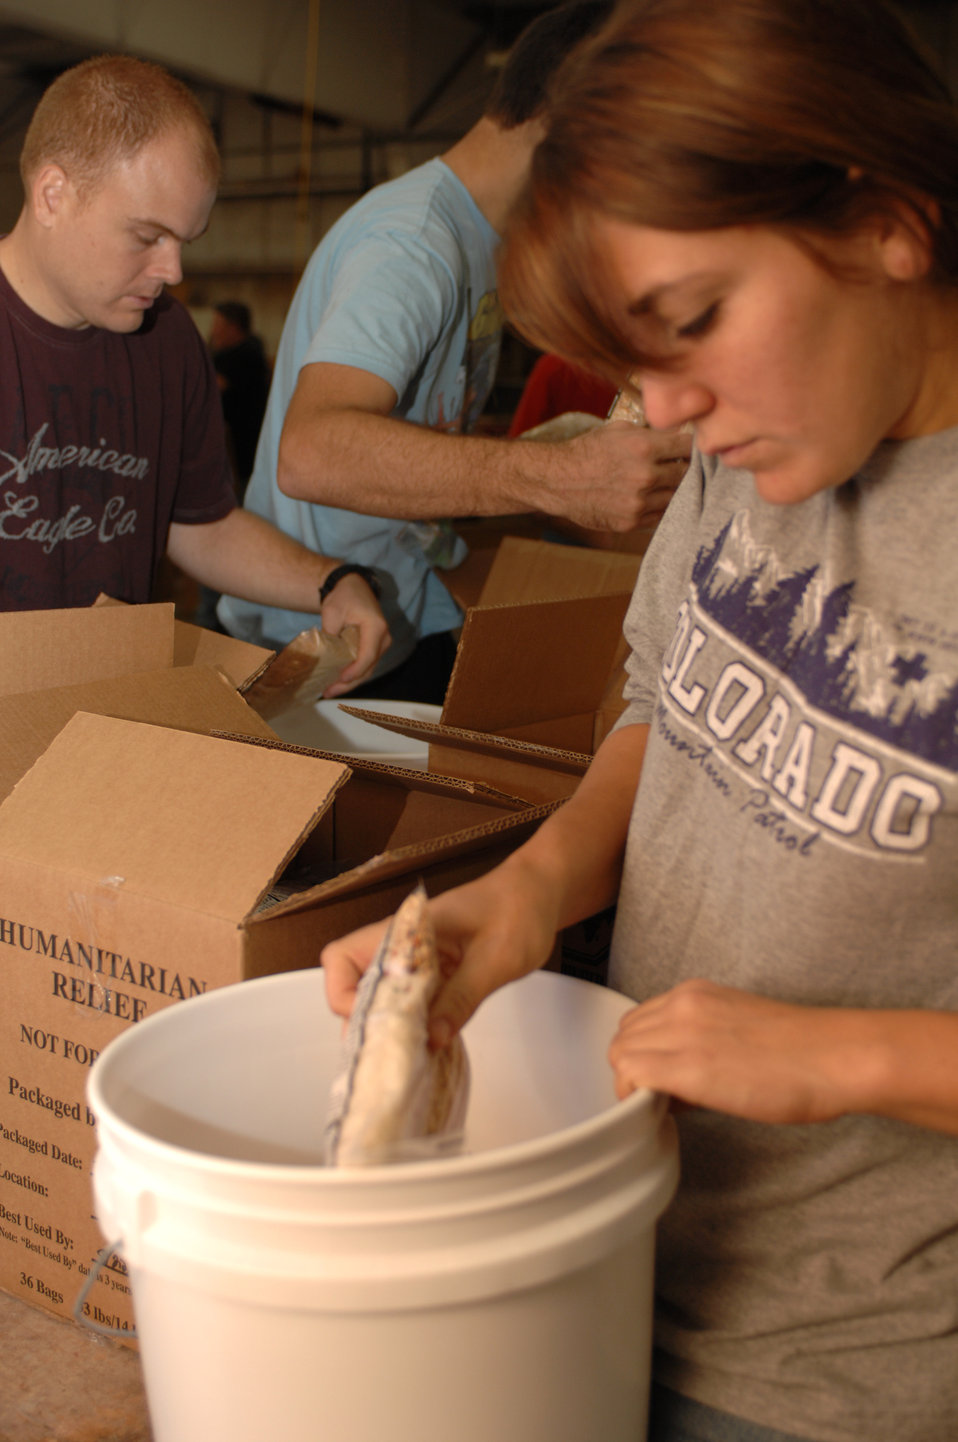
Airmen aid Stop Hunger Now

Erin Hutto packs rice into a bucket headed to Afghanistan during the Stop Hunger Now event Oct. 24, 2009, at the MERCI Mission Center in Goldsboro, N.C. Stop Hunger Now, an international hunger relief organization, donated more than 115,000 rice- and soy-based meals for the event. Ms. Hutto is a 4th Contracting Squadron contract specialist.